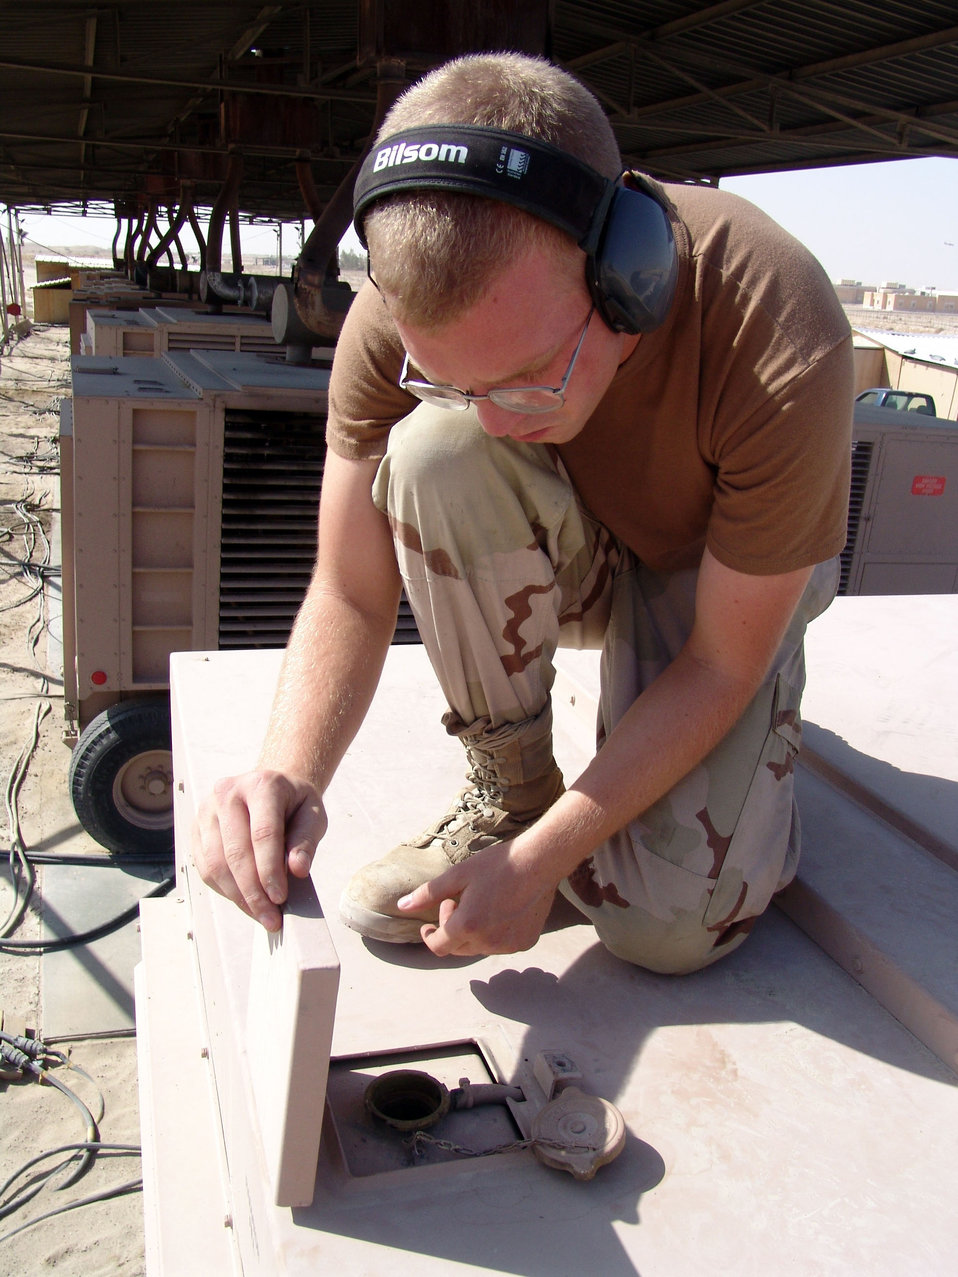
Desert duty

SOUTHWEST ASIA -- Airman 1st Class Joseph Buckland checks the coolant level on a generator. This generator is one of eight generators operating together to produce a 6-megawatt power plant at a forward-deployed location. Airman Buckland is assigned to the 386th Expeditionary Civil Engineer Squadron and is deployed from Malmstrom Air Force Base, Mont.